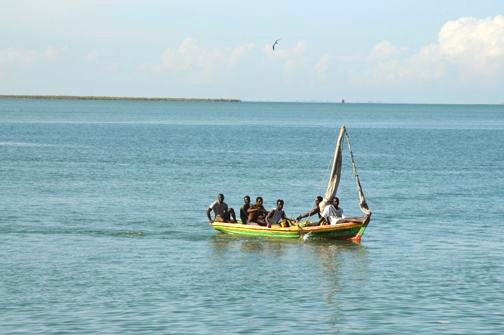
This image depicts a multicolored fishing boat off the coast of Haiti photographed from the U.S.S. Kearsarge (LHD 3) during a humanitarian mission in 2008 after two hurricanes had struck the island.The U.S.S. Kearsarge (LHD 3) departed Haiti, September 26th, 2008, after completing a 19-day disaster relief mission to the storm-ravaged Caribbean nation.